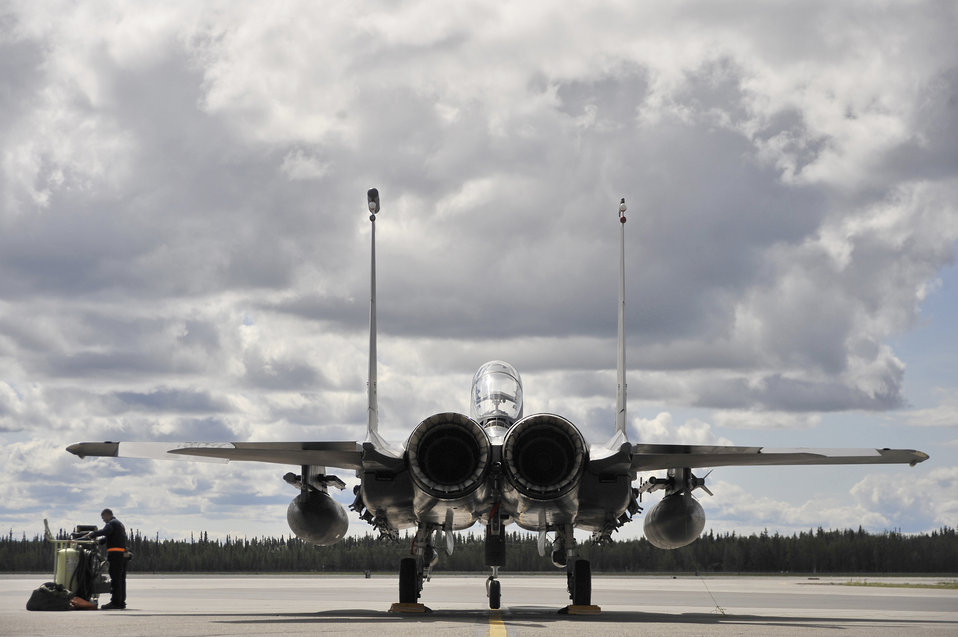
NORTHERN EDGE 2011 exercise

Senior Airman Mitchell Lake conducts preflight checks on an F-15E Strike Eagle June 13, 2011, during the NORTHERN EDGE 2011 exercise at Eielson Air Force Base, Alaska. Airman Lake is a crew chief assigned to the 391st Aircraft Maintenance Unit at Mountain Home Air Force Base, Idaho.